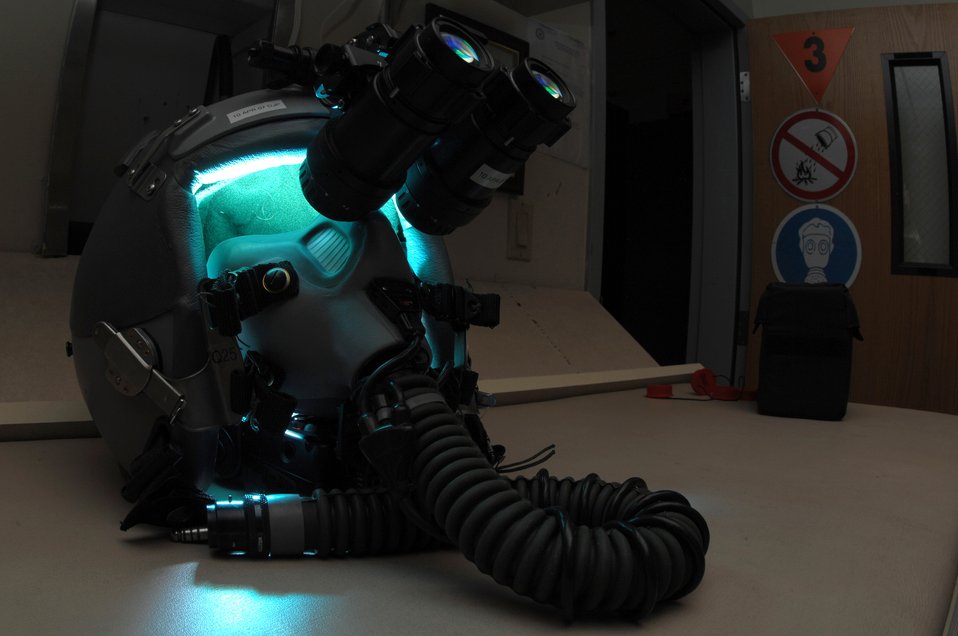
Seeing in the dark

AS/AVS-9 Night Vision Goggles sit atop a fighter pilot's helmet in the life support section of the 355th Fighter Squadron Nov. 29 at Eielson Air Force Base, Alaska. During the winter months, pilots of Eielson AFB are given a greater opportunity to train with NVG's more than their counterparts in the lower 48 states due to the decreased length of sunlight.